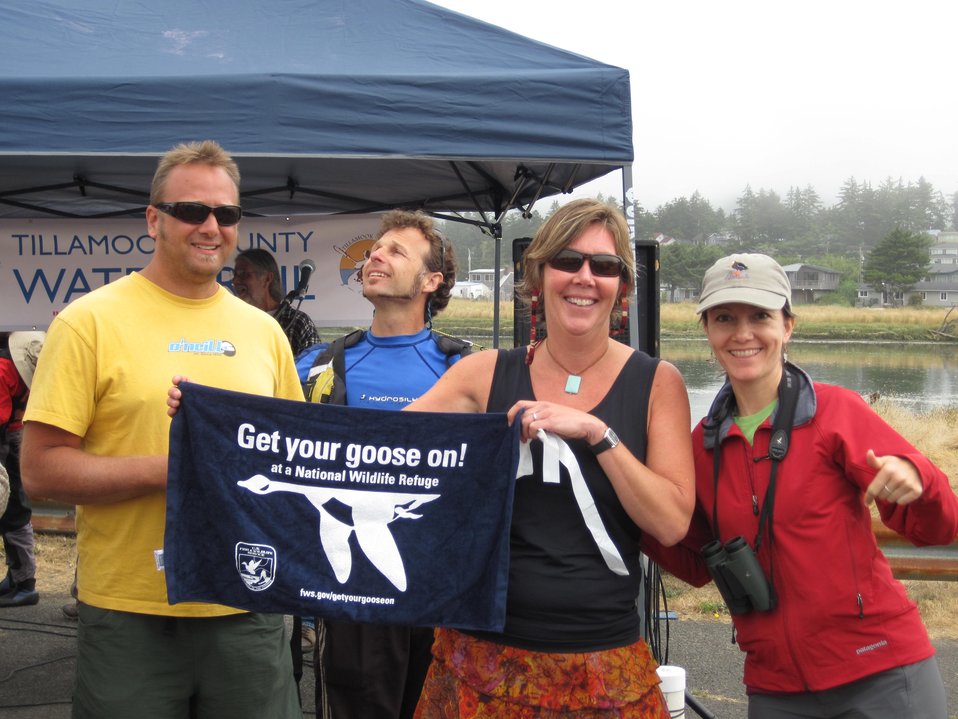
Get Your Goose On! Nestucca Bay Style

Oregon Coast NWR Visitor Services Manager Dawn Grafe joins Juile Chick of the Tillamook Estuaries Partnership and Marcus Hinz of Kayak Tillamook to Get their Goose On during the opening of a new water trail!